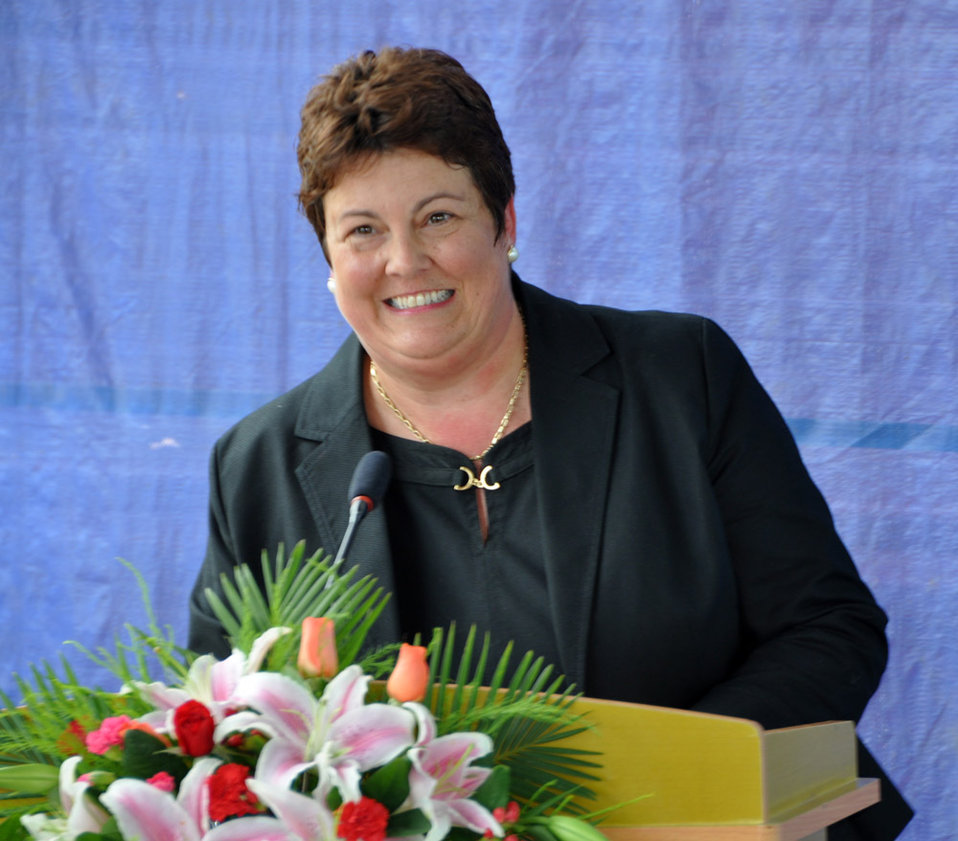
U.S. Charge d'Affaires Virgina Palmer at the UXO clearance ceremony, June 17, 2011, in Danang, Vietnam.